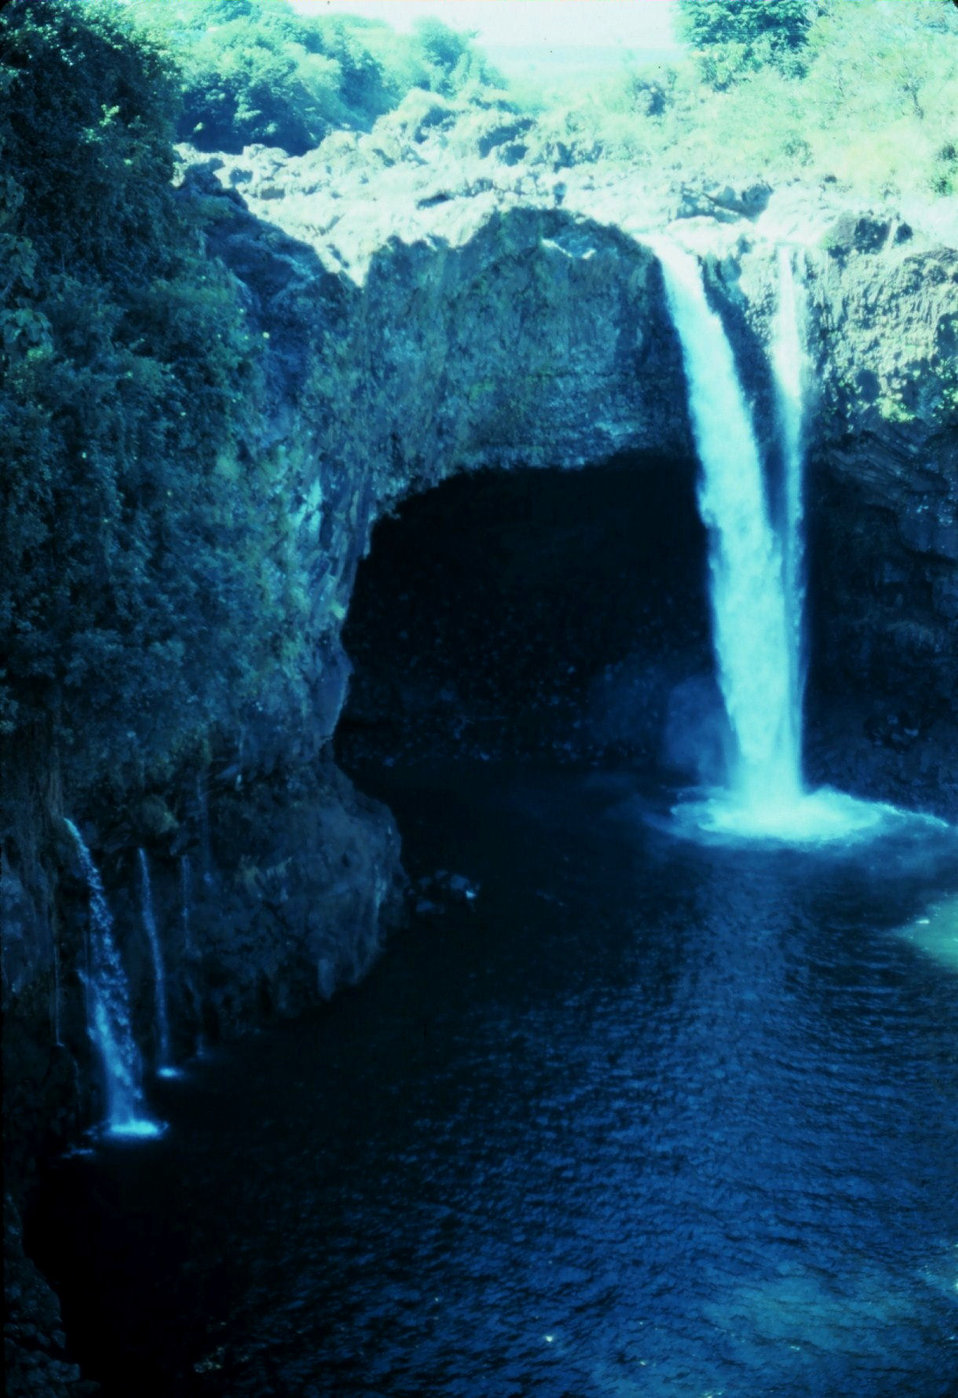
Rainbow Falls in Hilo